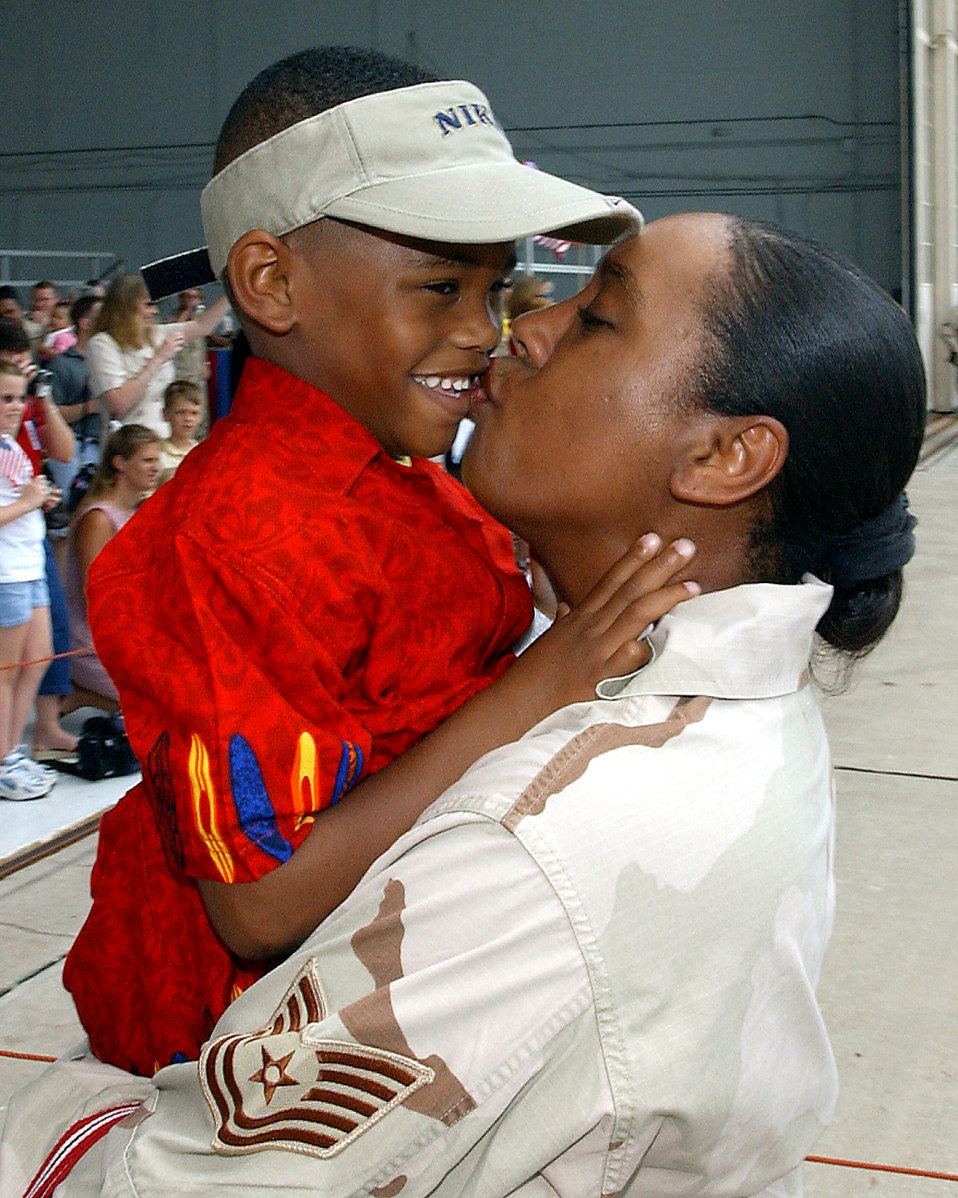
My mommy loves me

MACDILL AIR FORCE BASE, Fla. (AFPN) -- Tech Sgt. Kimberly Cummings gives her son, Justin, a kiss after returning home from Southwest Asia on May 14. Nearly 300 people assigned to U.S. Central Command returned here after deploying in support of Operation Iraqi Freedom.